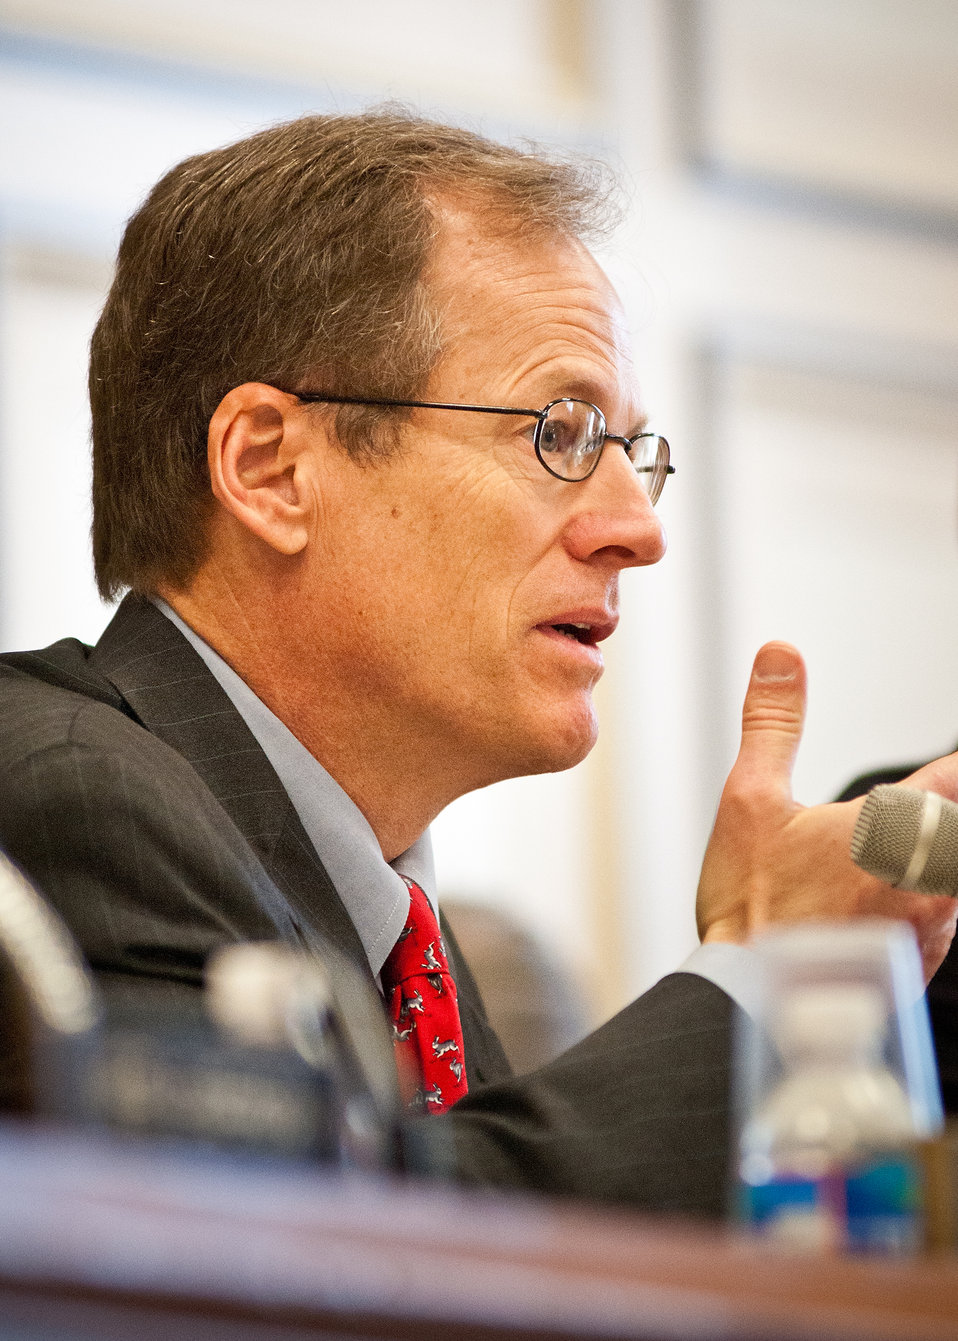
Congressman Jack Kingston, Georgia, Chairman of the House Agriculture Appropriations Committee poses questions to Ed Avalos, Under Secretary, Marketing and Regulatory Programs along with representatives of the Marketing and Regulatory Program agencies testifying on Capitol Hill before the House Agriculture Appropriations Subcommittee on the agencies fiscal year 2013 budget requests in Washington, D.C., Tuesday, March 6, 2012.